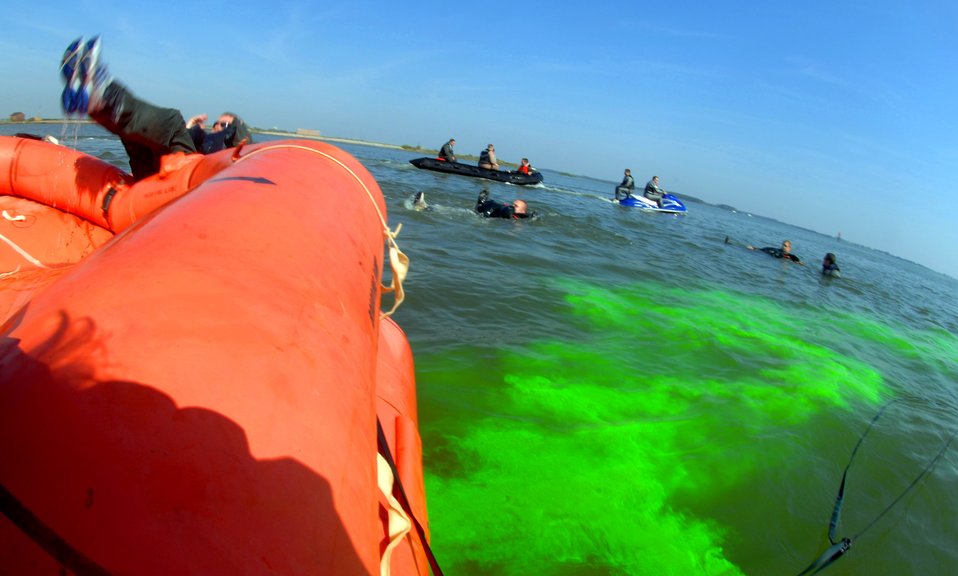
Water survival

1st Operations Support Squadron pilots exit a 20-man life raft as part of Survival, Evasion, Resistance and Escape Water Survival Training June 20. This training simulates a pilot landing in the ocean and being able to survive on their own for an extended period of time when they are able to be rescued. Currently this training is being held on a monthly basis.